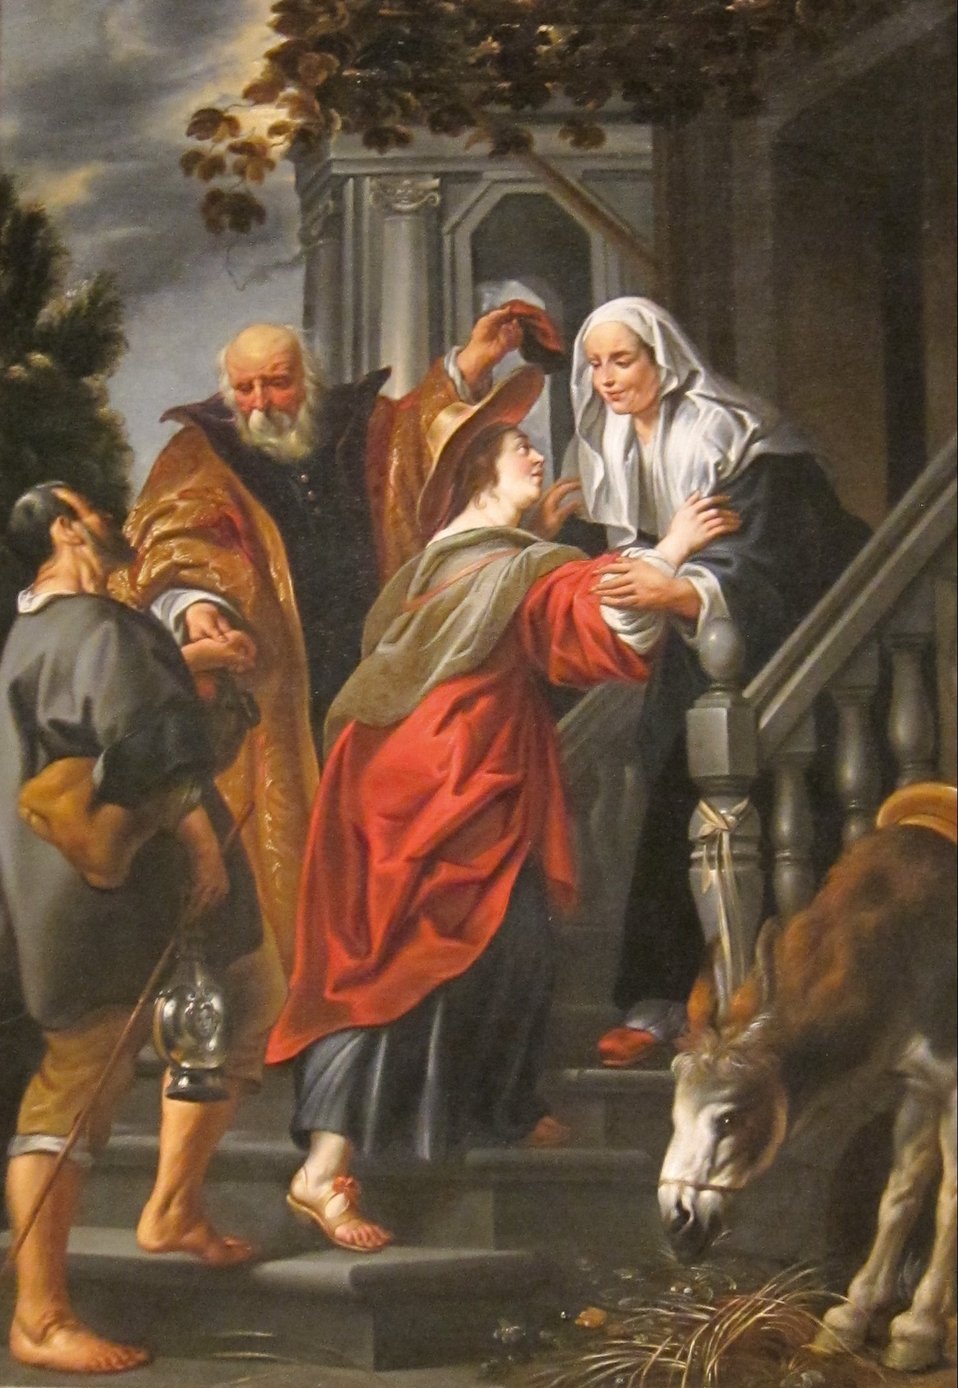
The Visitation, oil on canvas painting by Jacob Jordaens, c. 1642, Dayton Art Institute